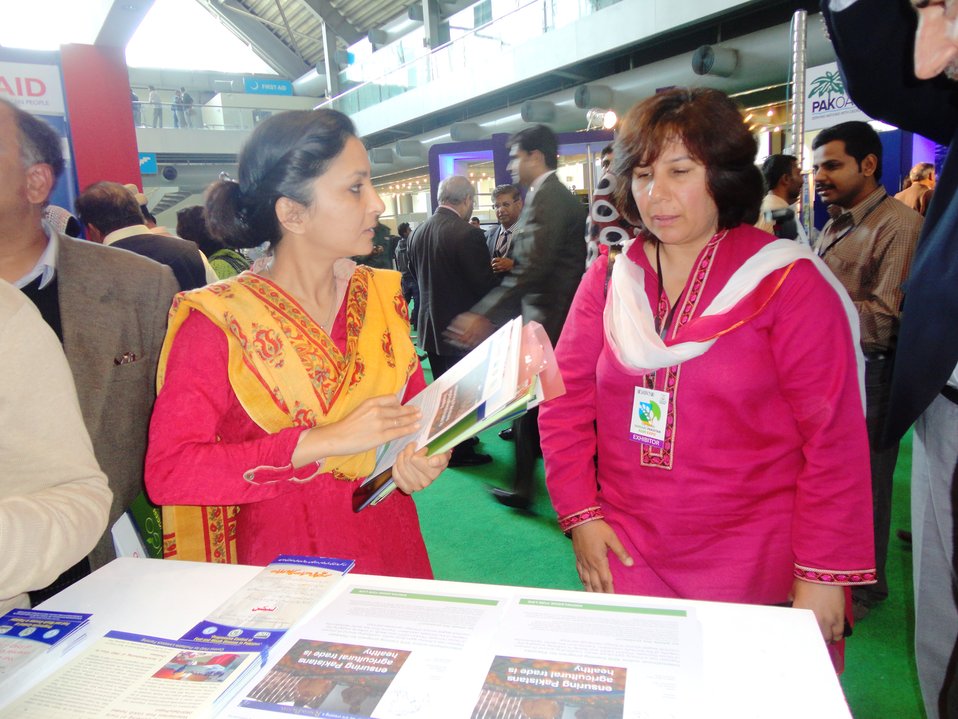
USDA SPS Project at the DAWN Sarsabaz Agri Expo

Project Manager, Ms. Mahrukh Siraj, while briefing visitor about SPS project at Dawn Sarsabz Agri Expo.